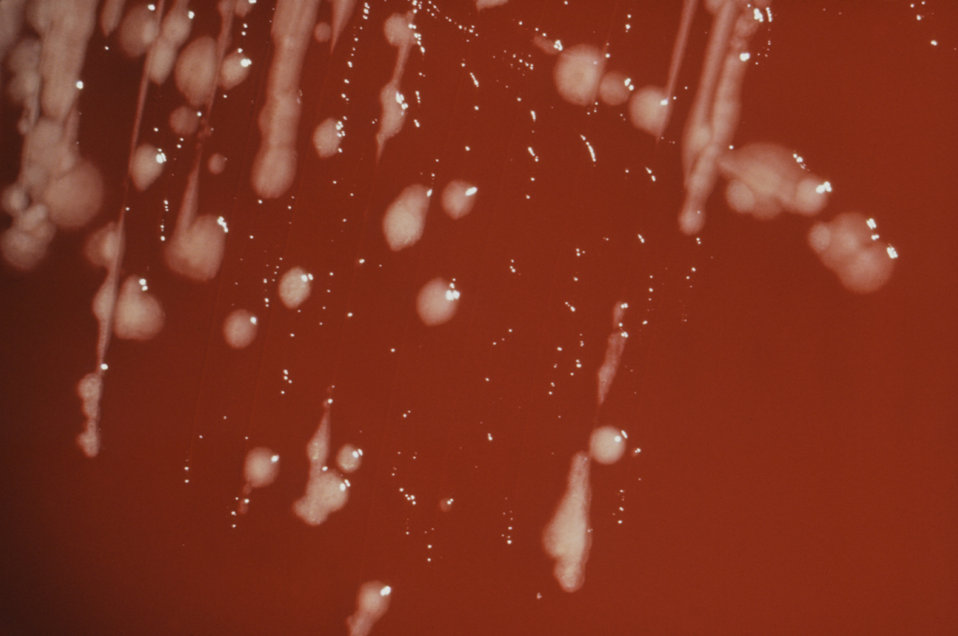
This photograph depicts the colonial growth pattern displayed by Pseudomonas aeruginosa bacteria, also known as Bacillus pyocyaneus, growing on a blood agar plate.